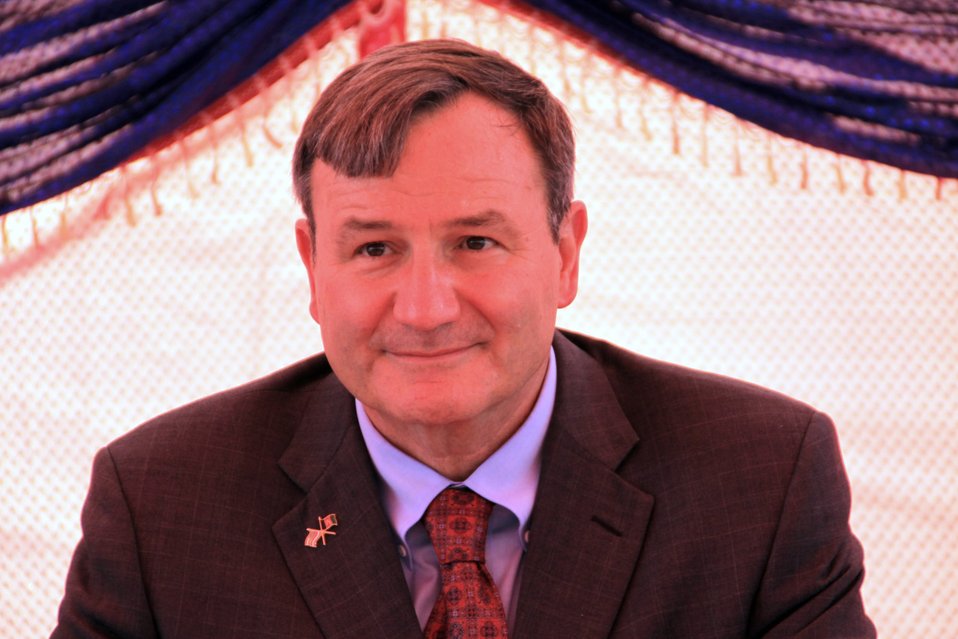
Badam Bagh Farm